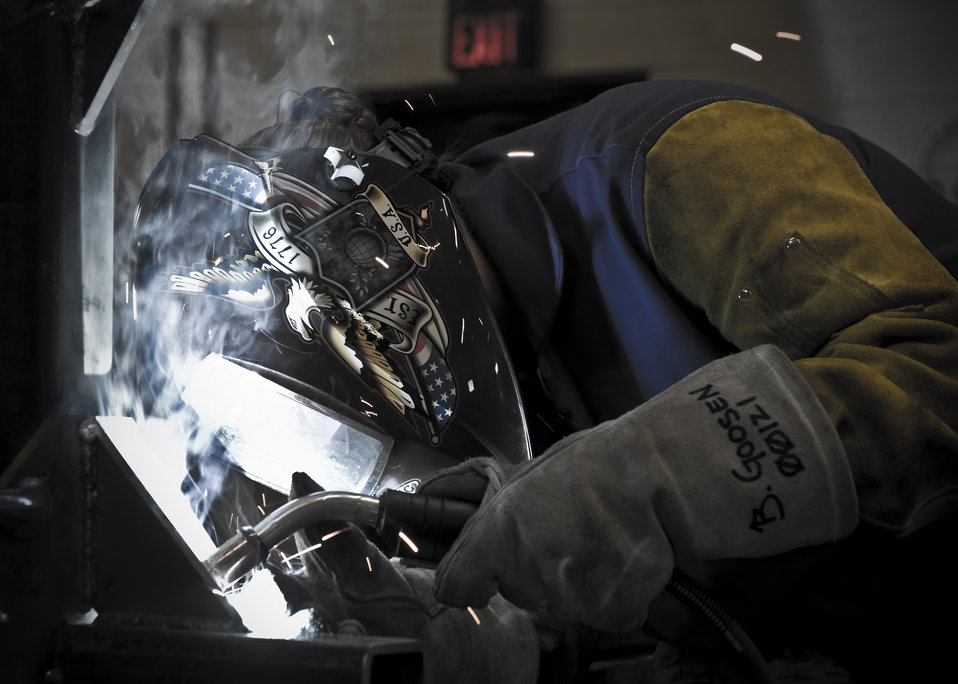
Heavy Metal Airman

Airman 1st Class Brooke Goosen, 7th Equipment Maintenance Squadron, welds a Y-stand for holding munitions Aug. 14, 2012, at Dyess Air Force Base, Texas. Goosen is the only female out of 28 Airmen in the Dyess metal shop and has more than seven years experience with welding.